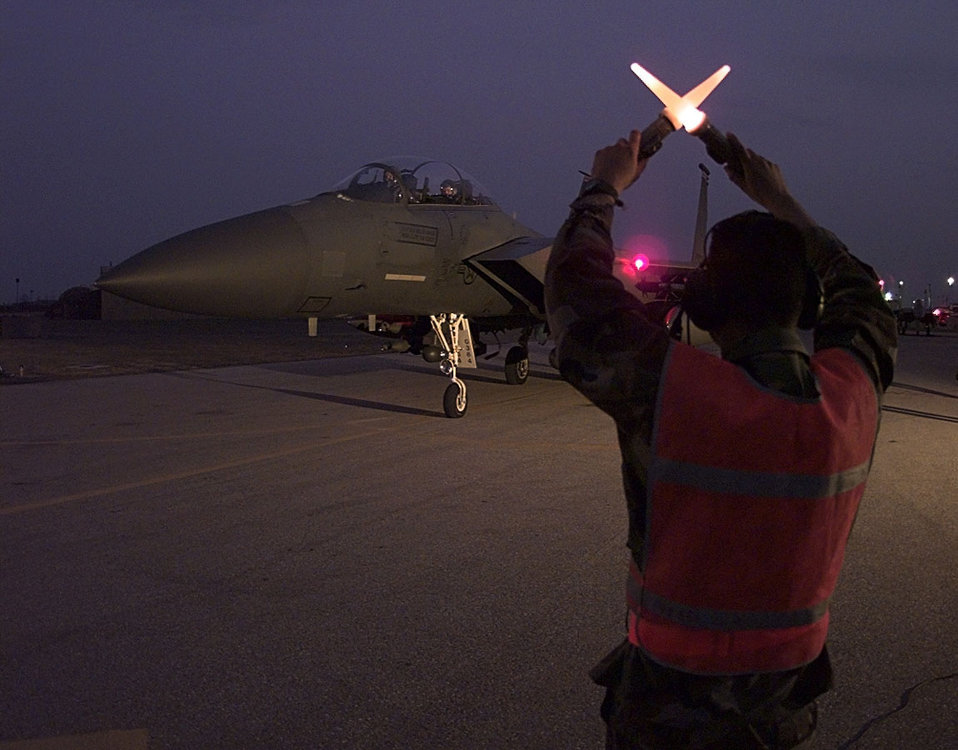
Successful return

OPERATION ALLIED FORCE -- F-15E Strike Eagles from the 494th Fighter Squadron, Royal Air Force Lakenheath, England, return from flying a mission against targets in Yugoslavia, March 28, 1999. Members of the 494th Fighter Squadron are deployed to Aviano Air Base, Italy, supporting Operation Allied Force.